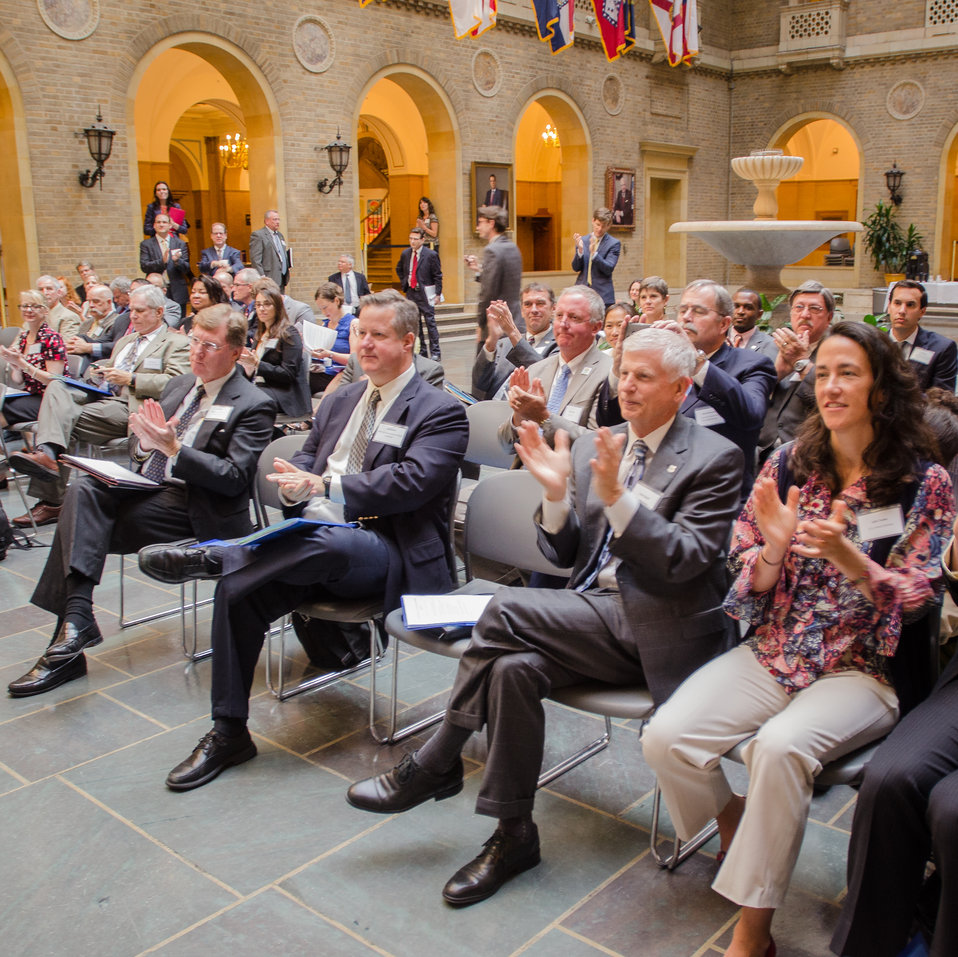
U.S. Department of Agriculture (USDA) Forest Service (FS) Chief Tom Tidwell (second from right) and others applaud the signing of the USDA Bioenergy Memorandum of Understanding. Deputy Agriculture Secretary Krysta Harden joined leaders from, Biomass Power Association, President and CEO Bob Cleaves; Pellet Fuels Institute Executive, Director Jennifer Hedrick; Biomass Thermal Energy Council, Executive Director Joseph Seymour; and Alliance for Green Heat, President John Ackerly, for the announcement of the new partnership agreement, at the USDA Headquarters, in Washington, D.C., on Wednesday, September 11, 2013.
The partnership agreement focuses on promoting wood energy nationwide as a means to address fire risks, bolster rural economic development, improve air quality, and help meet the Obama Administration’s renewable energy and energy efficiency goals. These organizations support the use of wood energy across the scale of users – from residential users, to commercial and intuitional facilities, to industrial production of heat and or electricity to drive businesses and feed the electrical grid.
Under the terms of the five grants announced by Deputy Secretary Harden, private, state and federal organizations will work together to stimulate the development of additional wood energy projects in their states. Collectively, $2.9 million will be spent o this effort -- $1.1 million on federal funds and $1.8 million in non federal funds. For more information o0n the cooperative agreement program, visit na.fs.fed.us.werc/wood-energy/ USDA Photo by Lance Cheung.